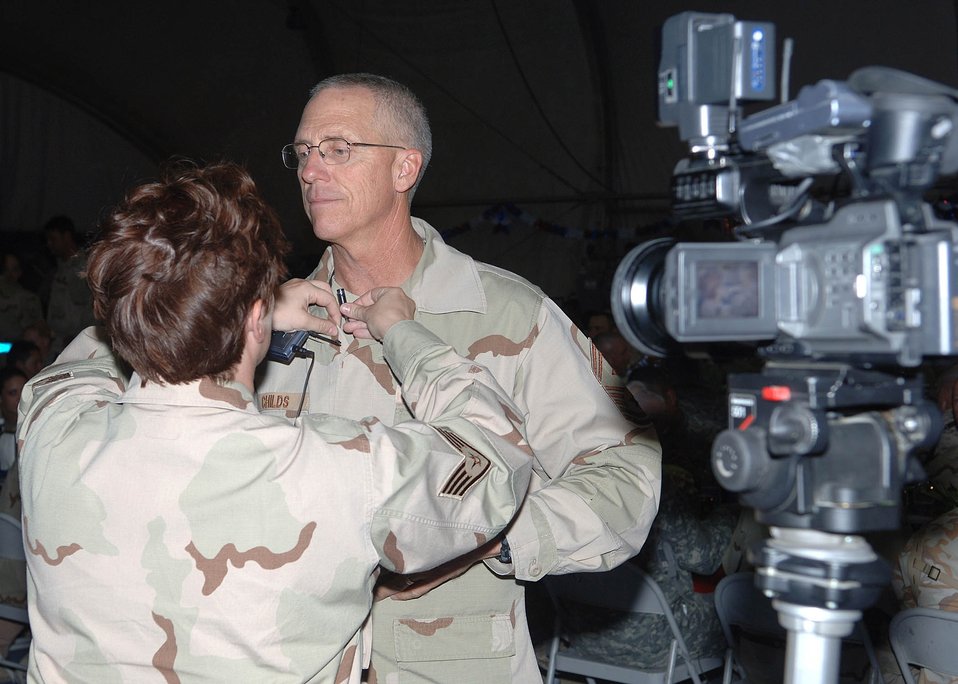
Bagram Airmen celebrate Air Force's 60th birthday

Staff Sgt. Stephanie Csornok